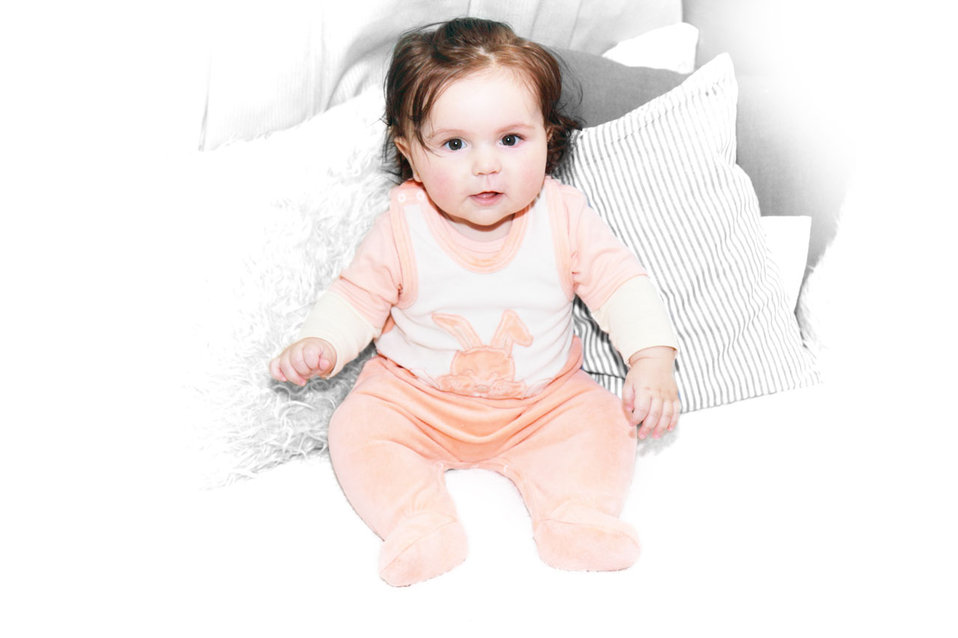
Baby girl sitting on white background.